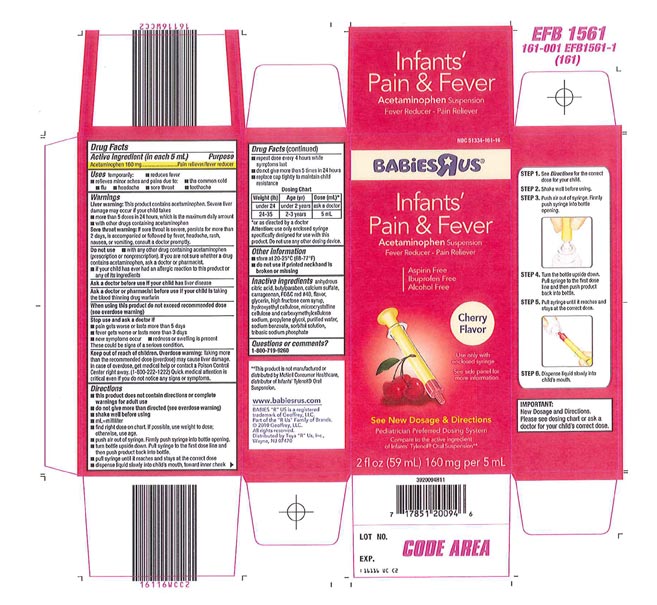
Recalled - Acetaminophen infant suspension liquid

November 1, 2013 – Product Recall – Perrigo Initiates Nationwide Voluntary Product Recall of Acetaminophen Infant Suspension Liquid, 160 Mg/5 Ml, Due to a Potential Defect with the Co-packaged Oral Syringe.